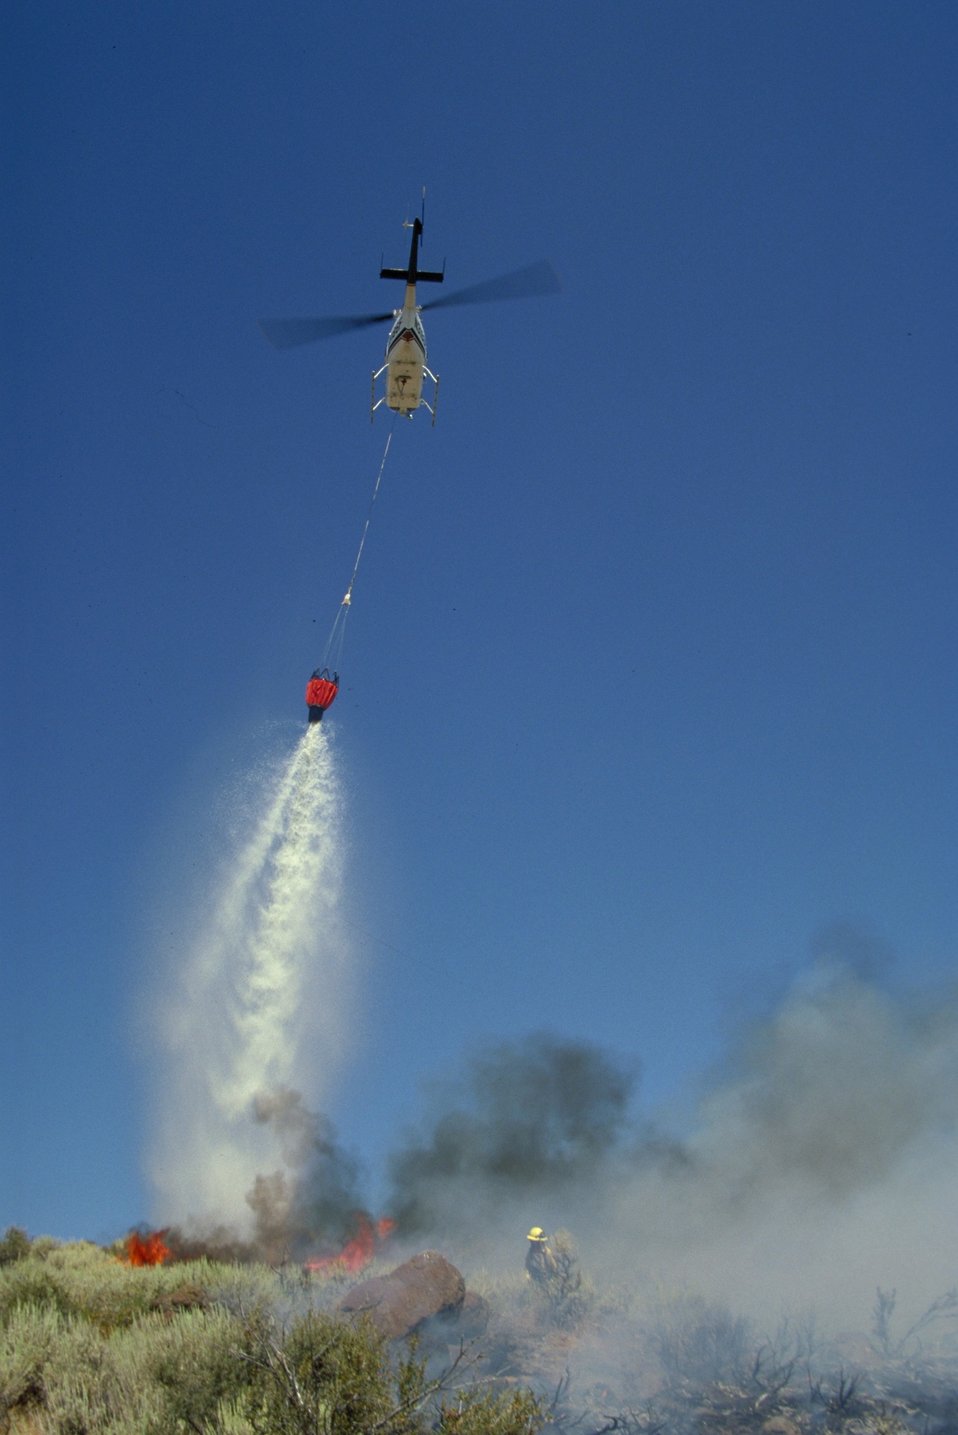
Helicopter bucket drop Fire Season 2000 Lower Snake River District LSRD